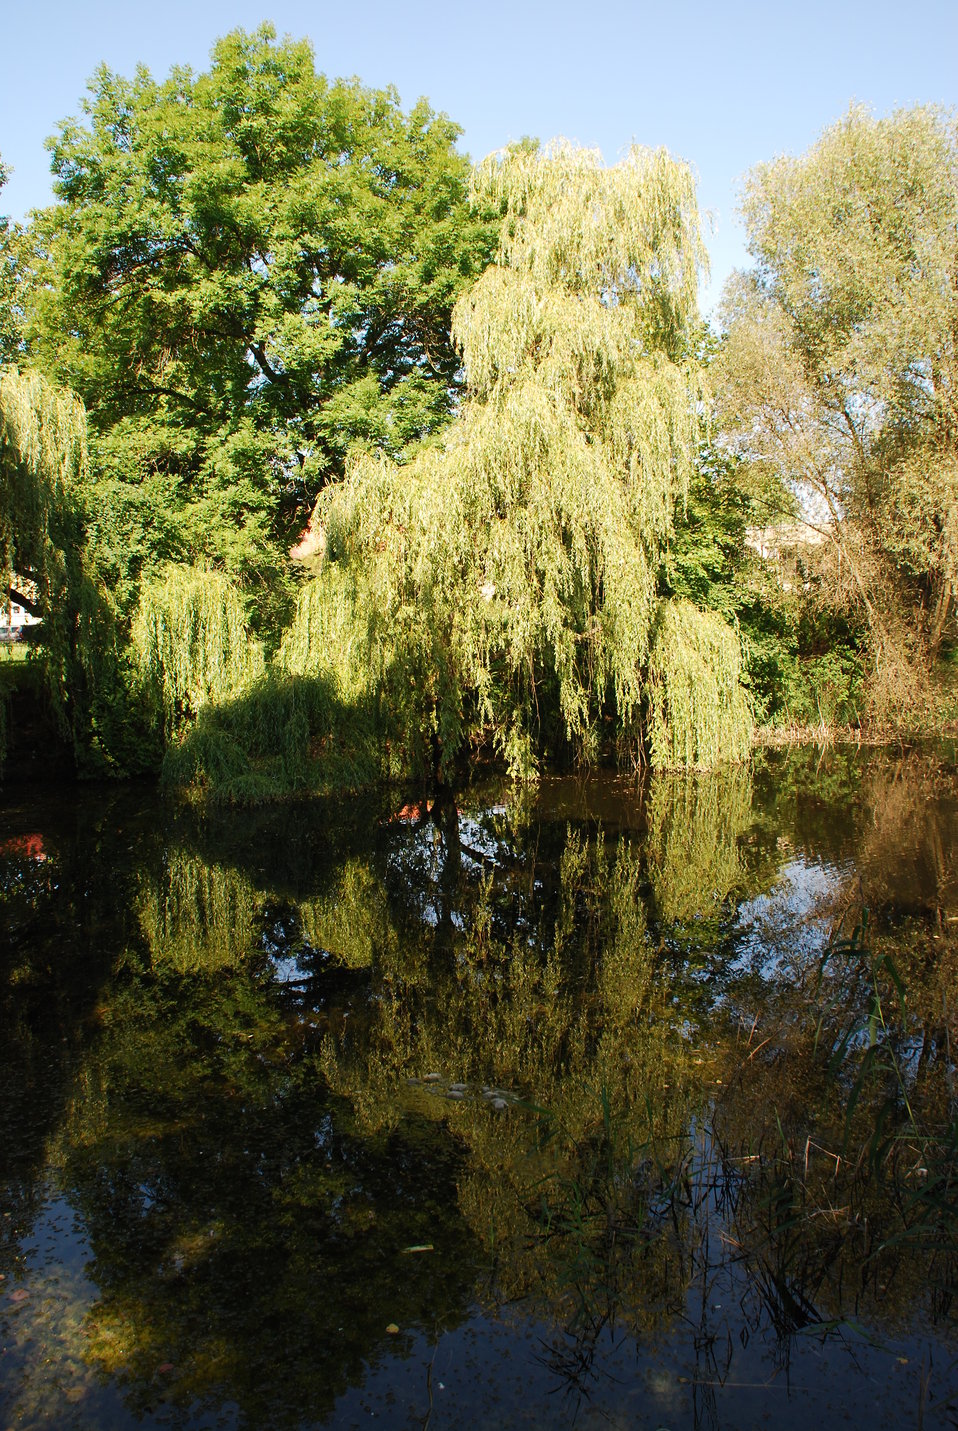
Theaterteich in Frankfurt (Oder), am ehemaligen Kleist-Theater, Friedrich-Ebert-Straße